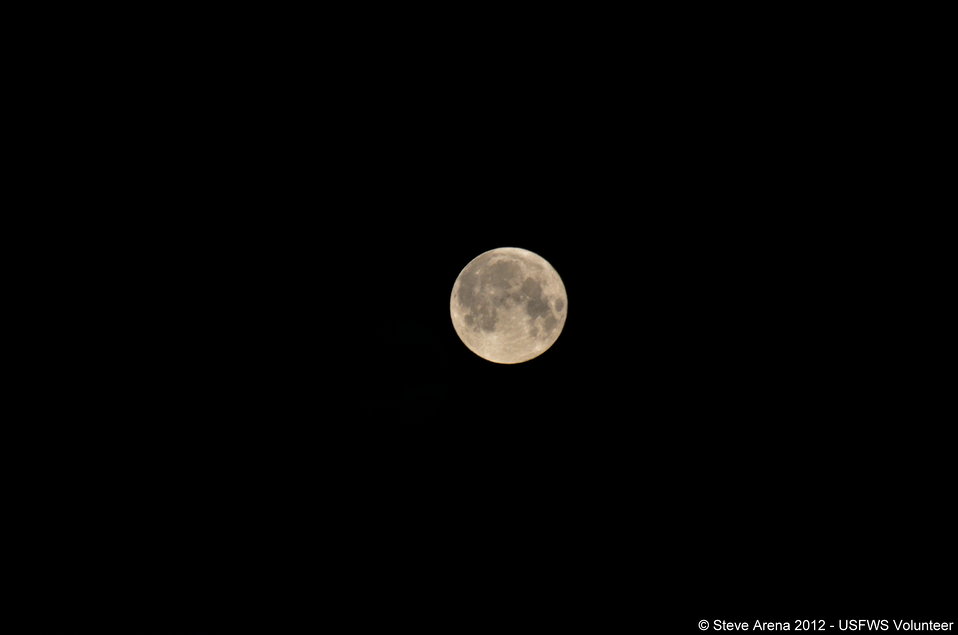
'Super' Moon taken from atop the observation tower 3:36 a.m. 06 May 2012 prior to Marshbird Survey

Full moon at Great Meadows National Wildlife Refuge.